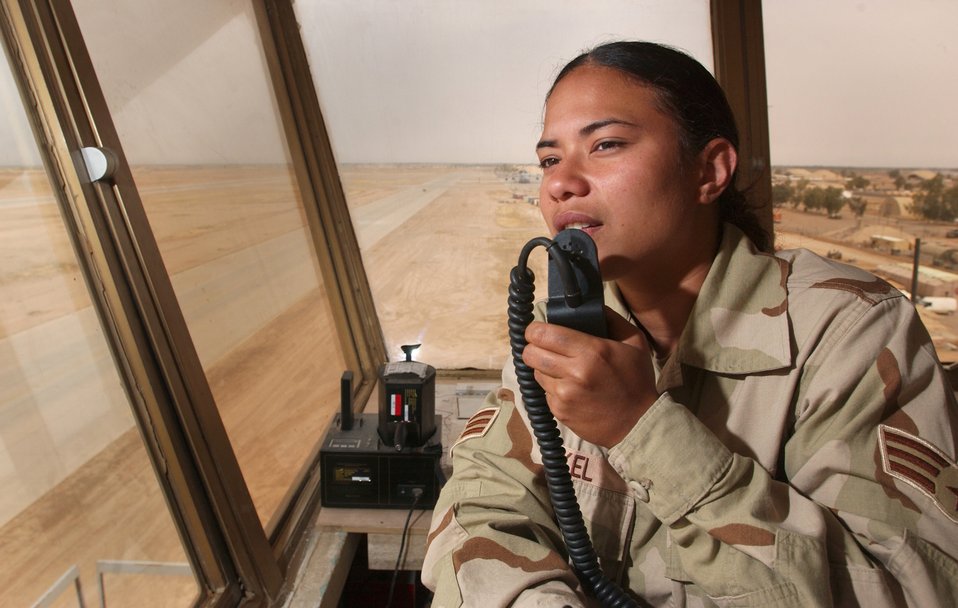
Breaker, breaker

BALAD AIR BASE, Iraq -- Senior Airman Salamasina Nickel gives radio clearance for traffic crossing the taxiway here April 28. Airman Nickel is an air traffic controller deployed with the 332nd Air Expeditionary Operations Support Squadron.